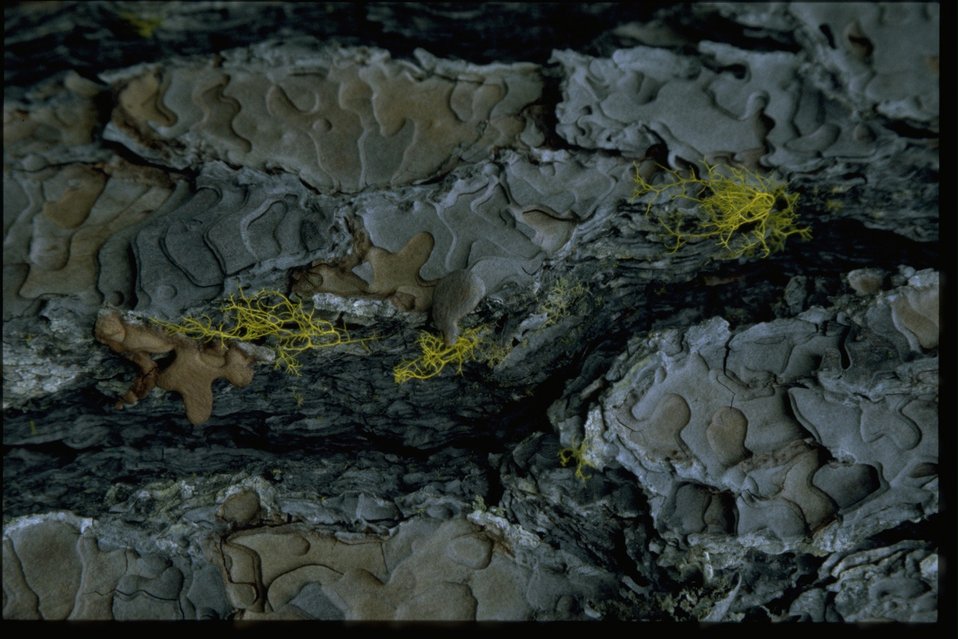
Closeup shot of Yellow Pine (Pinus jeffreyi) bark.